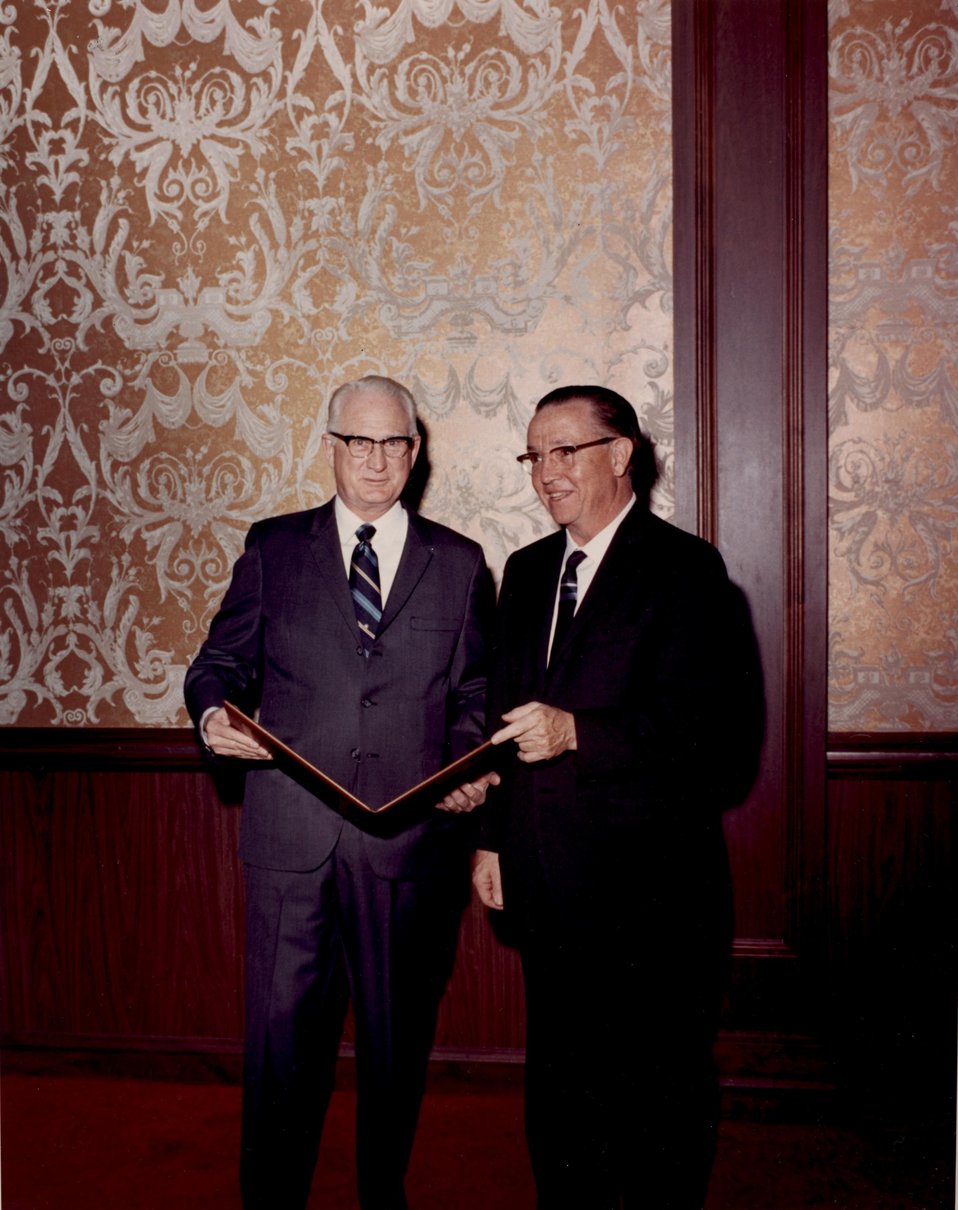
Fermi Award. Recipient: Walter Zinn. Date: Dec 2, 1970.